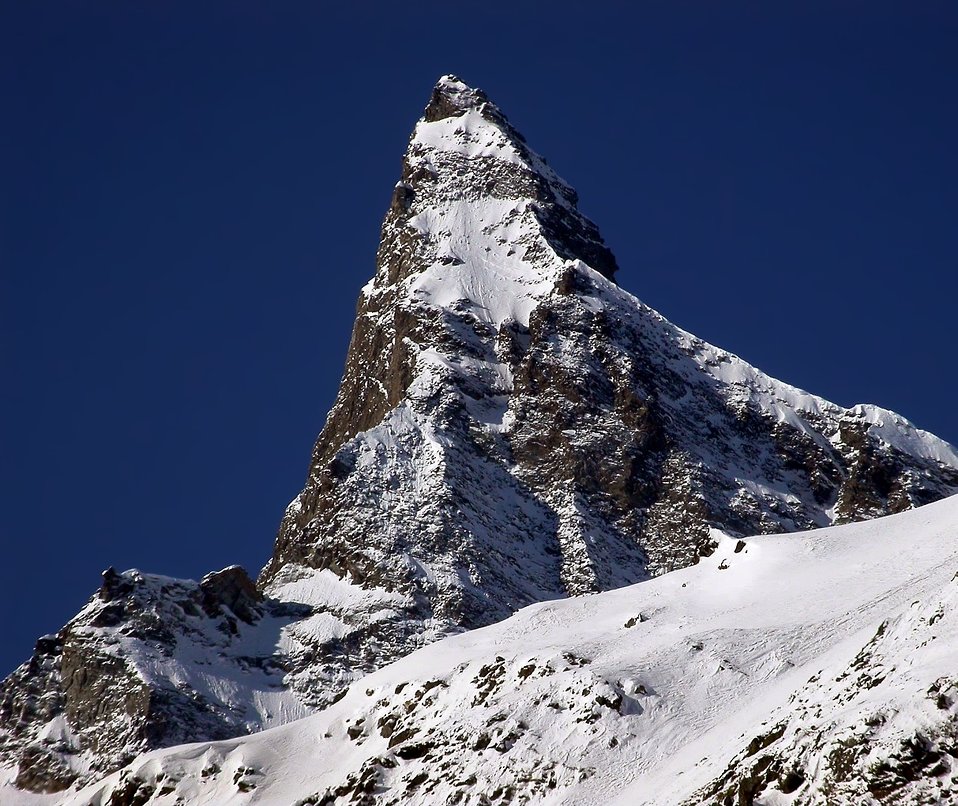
Italiano: Monti la Gran Rousse Rhemes Notre Dame - Alpi Graie - Italy